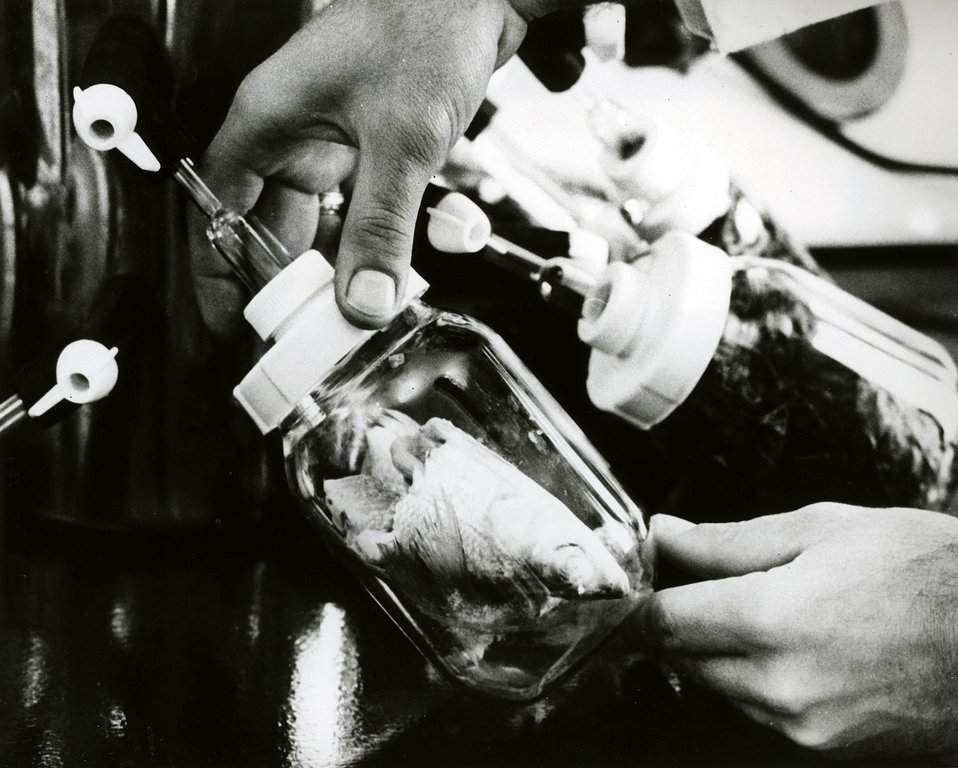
A fish, taken from Lake Michigan, is vacuum dried as the first step in reducing it to a small laboratory sample for analysis.
c.1970